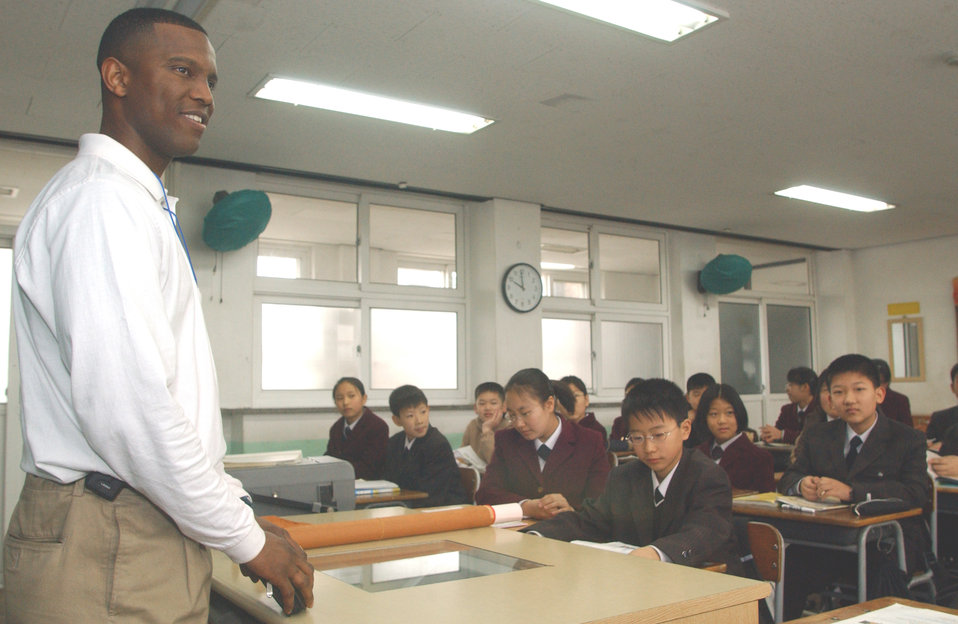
Teaching English

KUNSAN, South Korea (AFPN) - Tech. Sgt. Gregory Braxton talks to 13-year-old students at a school here. Sergeant Braxton is assigned to the 8th Communications Squadron at Kunsan Air Base and volunteers three Saturdays a month to teach the students English and about the American culture.